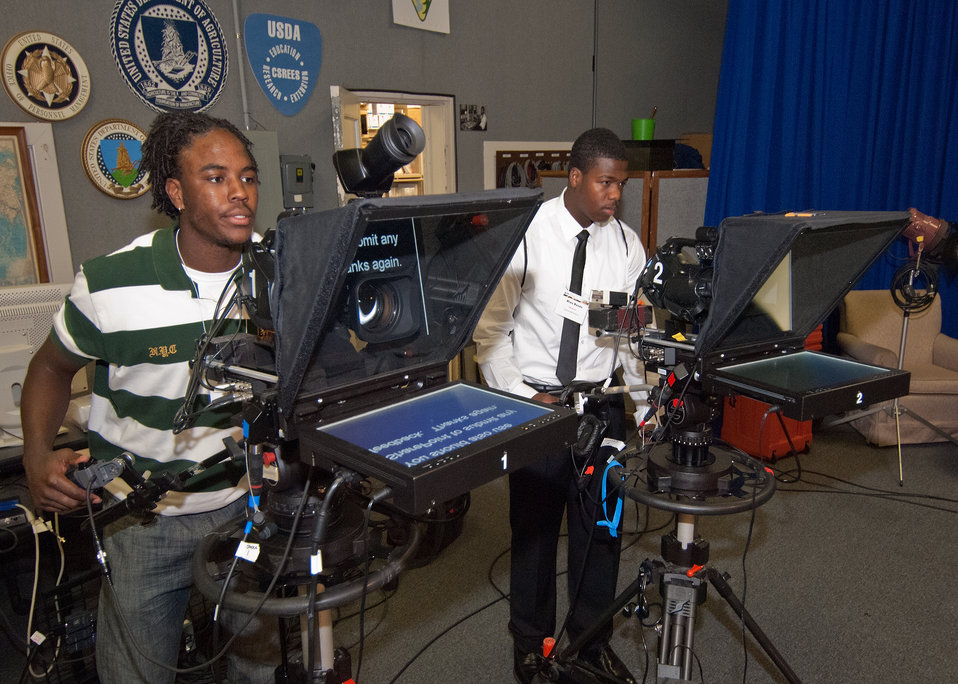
While on a Career Opportunity, seniors from Calvert High School Calvert, Texas tour the television studio United States Department of Agriculture (USDA) as part of a senior trip sponsored by the Farm Service Agency “Ag in the Classroom” program Monday, May 23, 2011, in Washington, DC. Seniors from Calvert High School Calvert, Texas (L to R) Andre Ross and Jamarion Ramirez have an opportunity to operate cameras in the USDA Creative Media and Broadcast Center television studio.